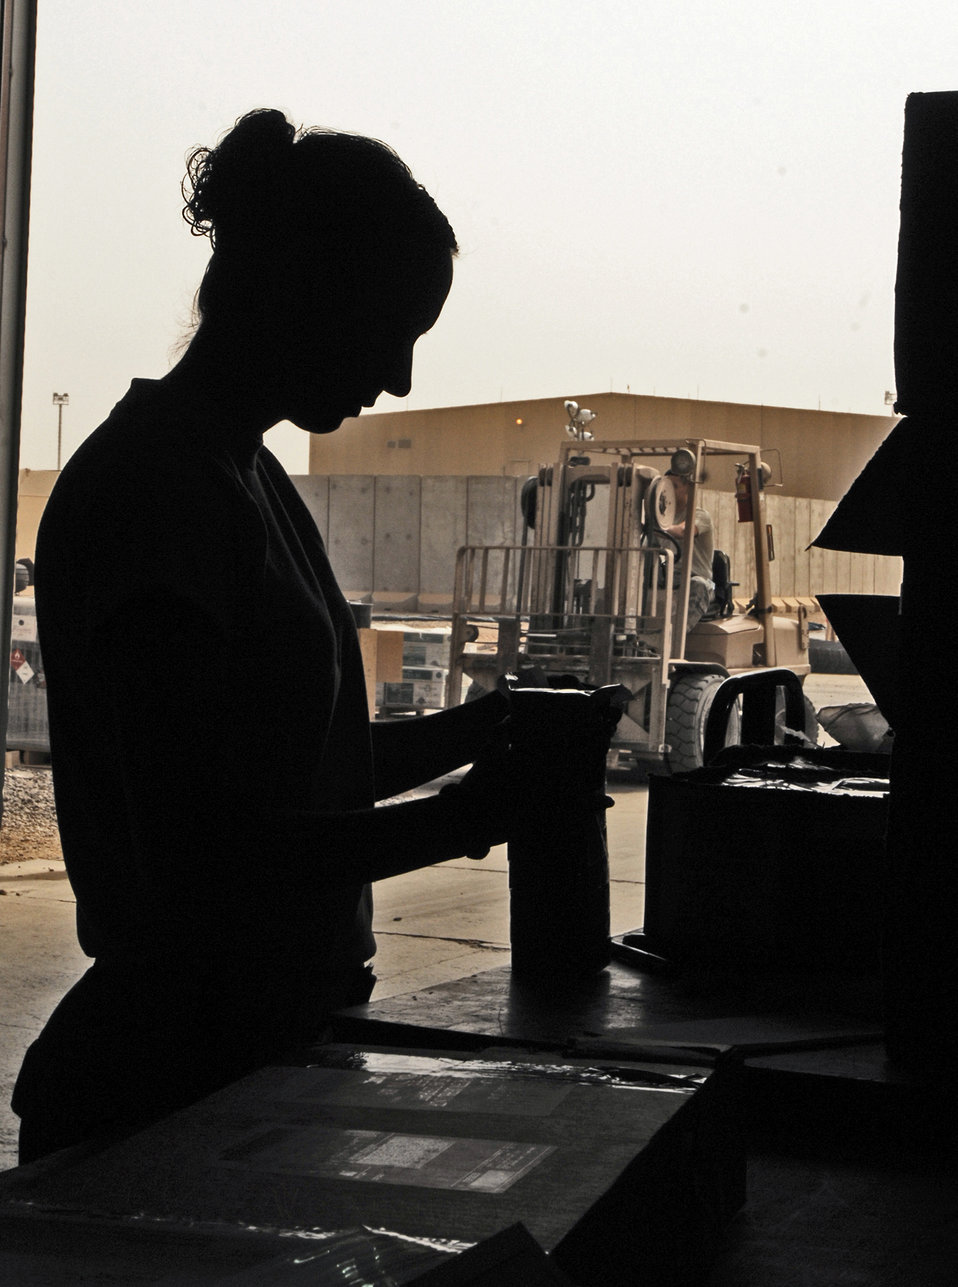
Joint Base Balad Airmen's initiatives shorten supply lines

Airman 1st Class Danielle Connelly checks in aircraft parts and supplies Aug. 5 at Joint Base Balad, Iraq. The 332nd Expeditionary Logistics Readiness Squadron's Receiving Flight Service Center Airmen process approximately 350 aircraft parts a week, including broken parts and replacements, which they ship to recipients across the base. Airman Connelly, a flight service center journeyman assigned to the 332nd ELRS, is deployed from Davis-Monthan Air Force Base, Ariz. Her hometown is Alamogordo, N.M.